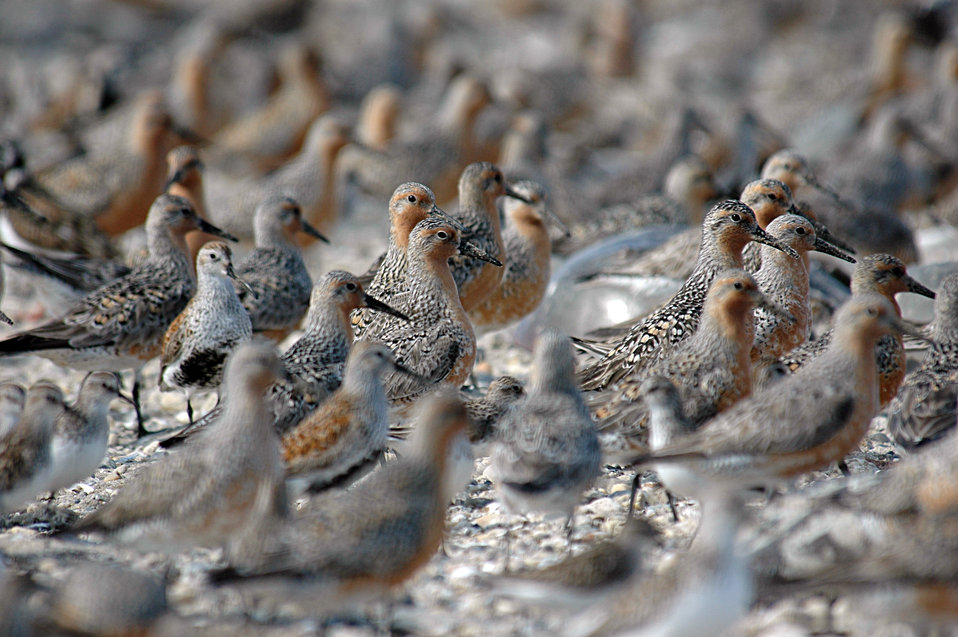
Red Knot

Mispillion Harbor, Delaware.